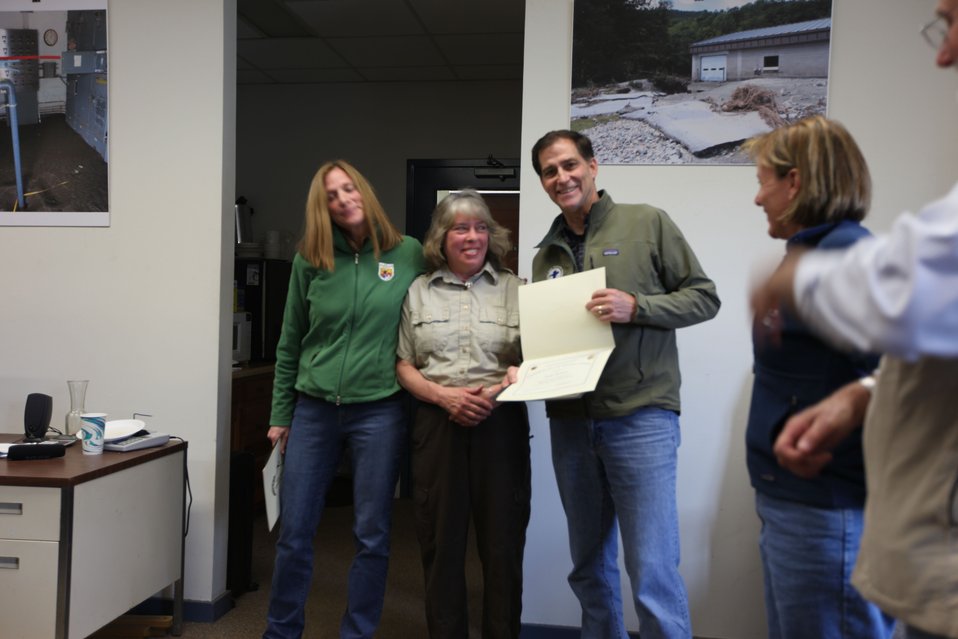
Special Award from Dan Ashe for Judy Romero

U.S. Fish & Wildlife Service Director Dan Ashe visits the Northeast Region
for a tour of the White River National Fish Hatchery in Bethel, Vermont on
April 27, 2012. The hatchery was devastated by Tropical Storm Irene and
Dan Ashe had the chance to meet and thank the staff for their heroic work.
Director Ashe also visited restoration/flood response/fish passage project
sites in Rochester, Vermont and met with local officials and staff from the
White River Partnership.